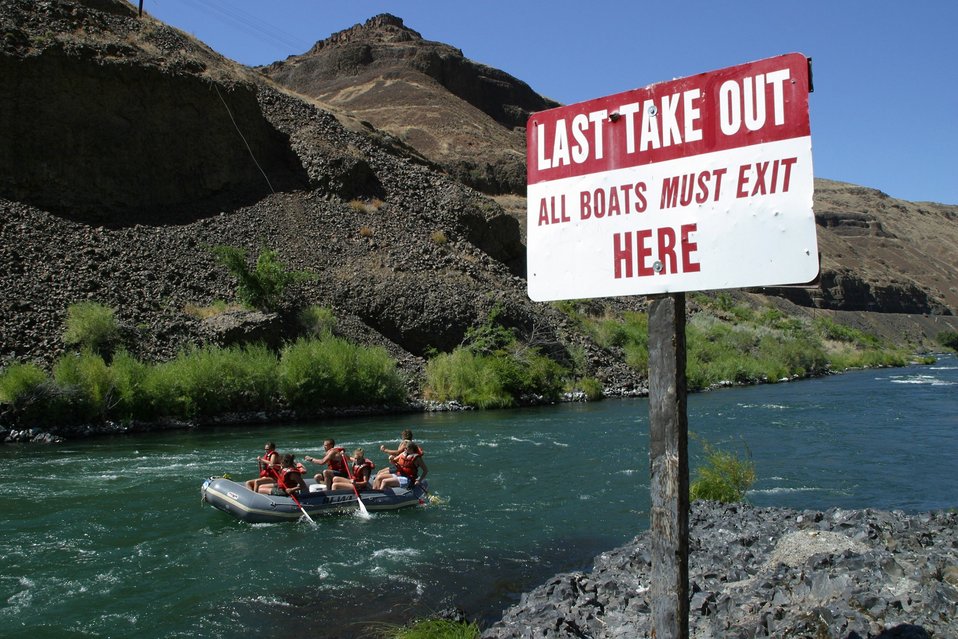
Sandy Beach is the last take out before Sherars Falls. All watercraft must exit the river!